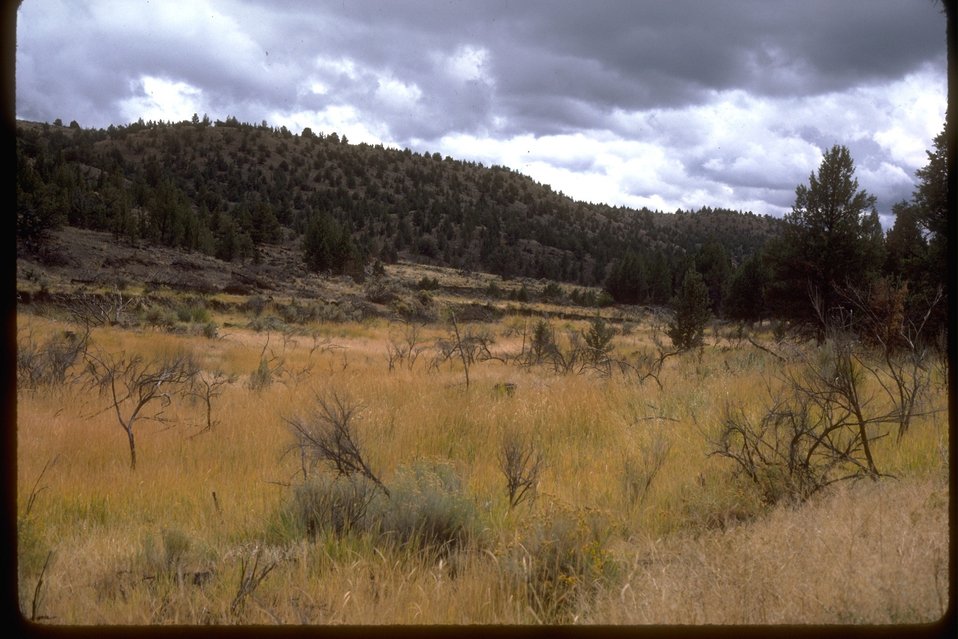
Intermediate wheatgrass seeding in Easter, OR.